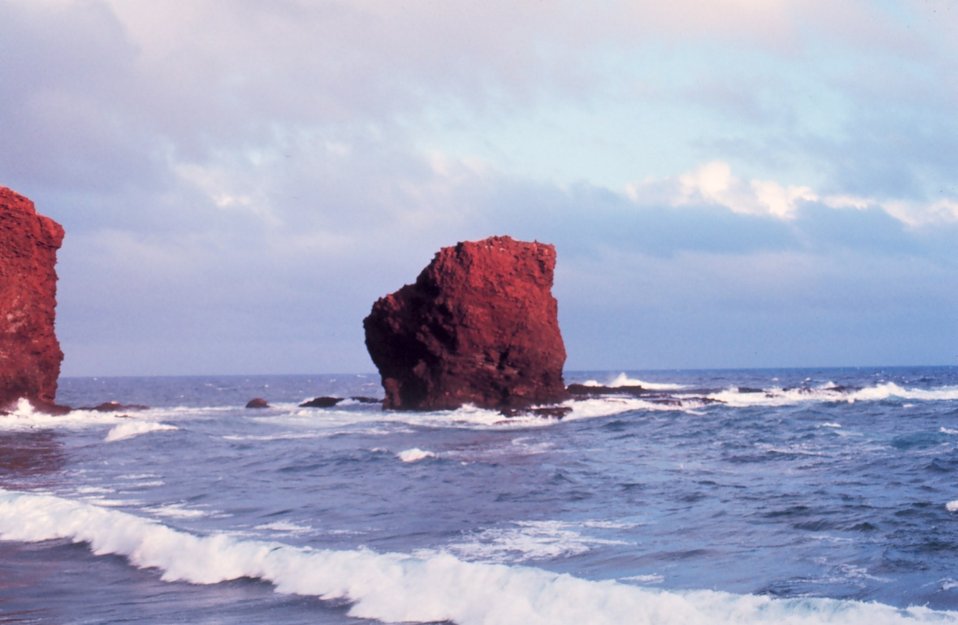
Lanai- Maui trip